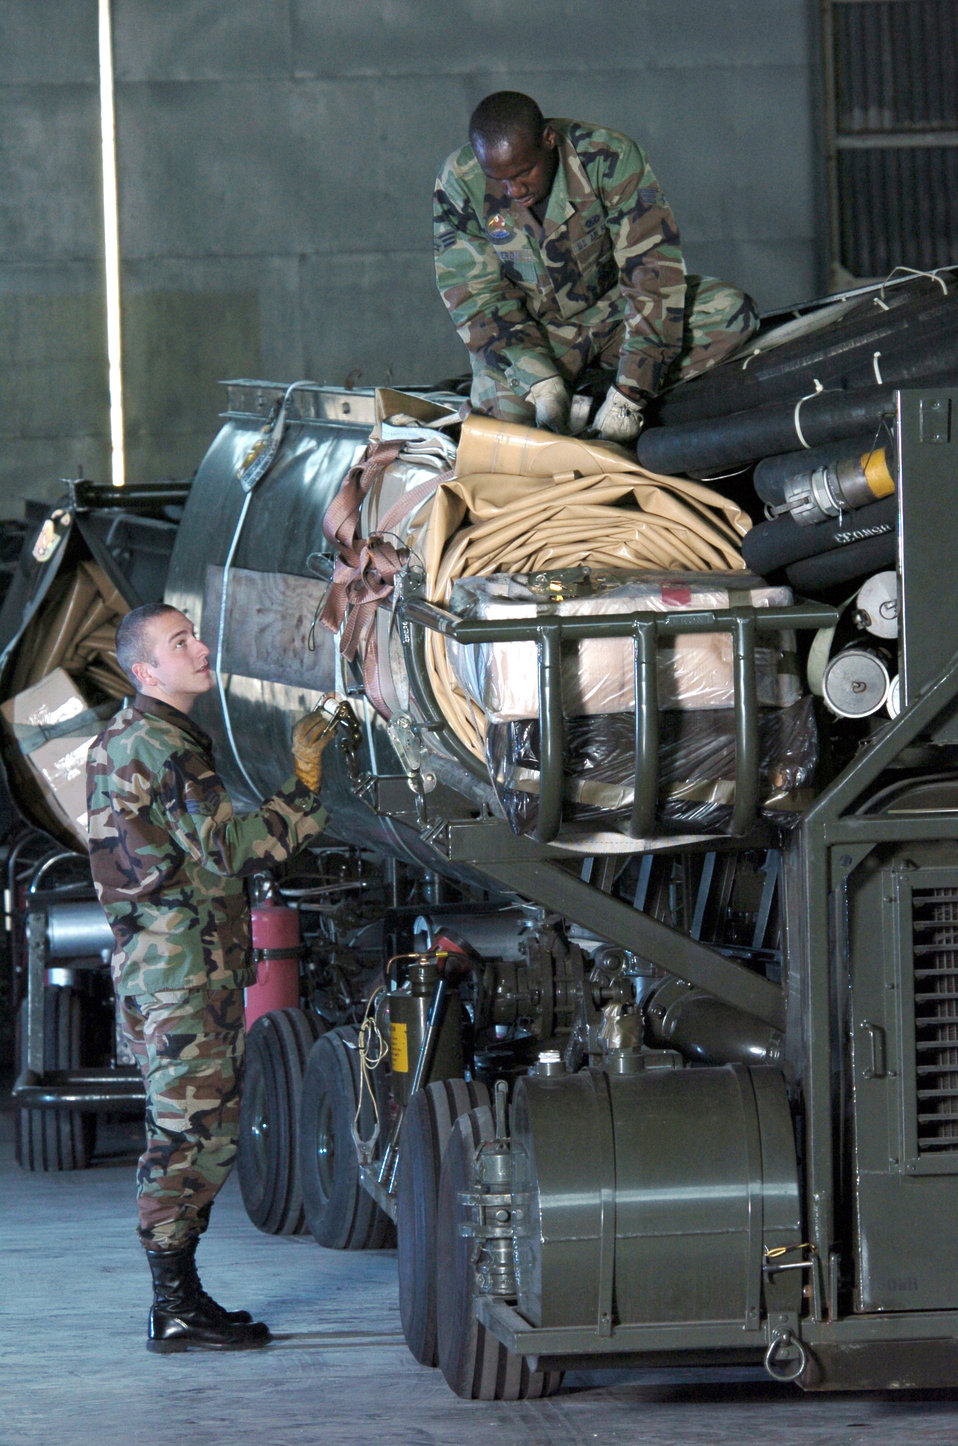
Yokota fuels specialists support global missions

YOKOTA AIR BASE, Japan -- Senior Airmen David Cameron (top) and Michael Gullet secure cargo straps on an R-14 air transportable hydrant refueling system during an inspection here. The R-14 can be airlifted or ground shipped anywhere in the world and made fully operational in a matter of hours. Each unit contains a pump; two 50,000-gallon bladder tanks; and all the hoses, valves, and fittings necessary for operation. The Airmen are assigned to the 374th Logistics Readiness Squadron's fuels mobility support equipment element.